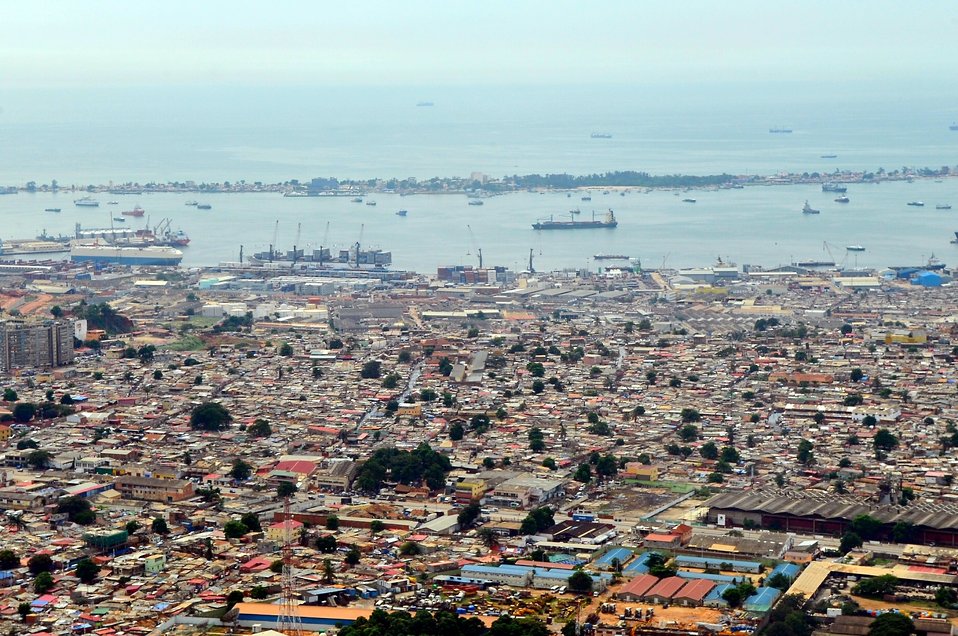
Port of Luanda Seen From Secretary Kerry's Plane Upon Arrival in Angola

The Port of Luanda, Angola, is seen from the airplane carrying U.S. Secretary of State John Kerry as it came on for a landing after a flight from Kinshasa, Democratic Republic of Congo on May 4, 2014.